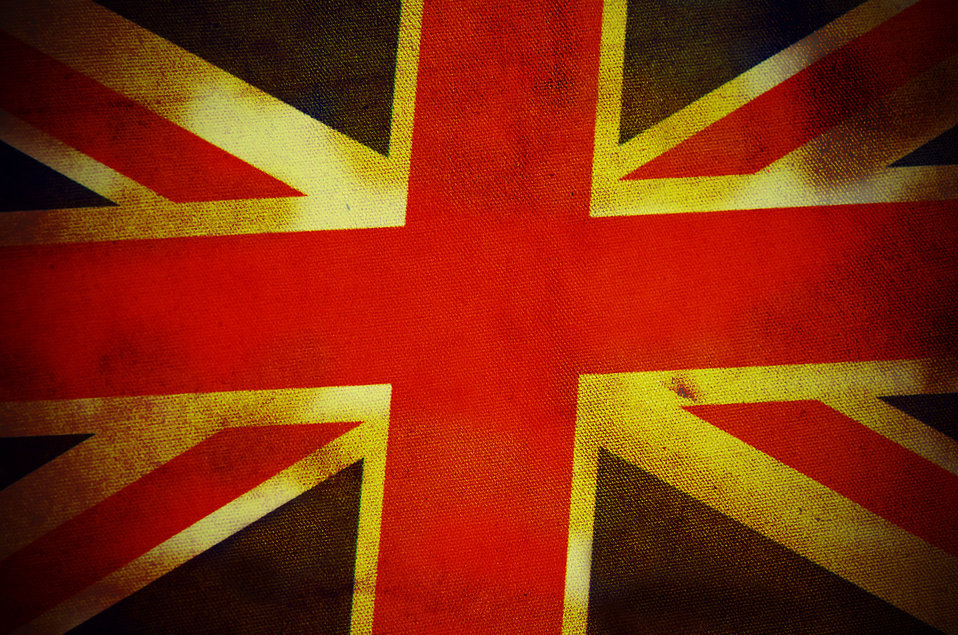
Old flag of england.